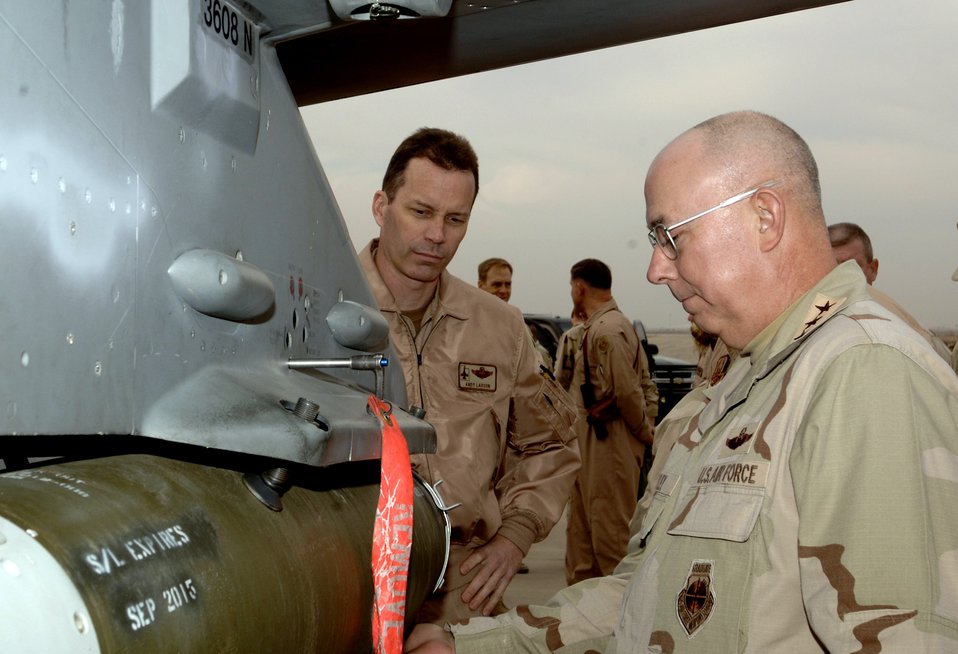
NATO air forces remain strong, look to future excellence

NATO air forces' partnership is strong and poised to grow even stronger over the long haul, said Air Force Chief of Staff Gen. T. Michael Moseley. Here he examines a joint direct attack munition loaded on an F-16 Fighting Falcon.